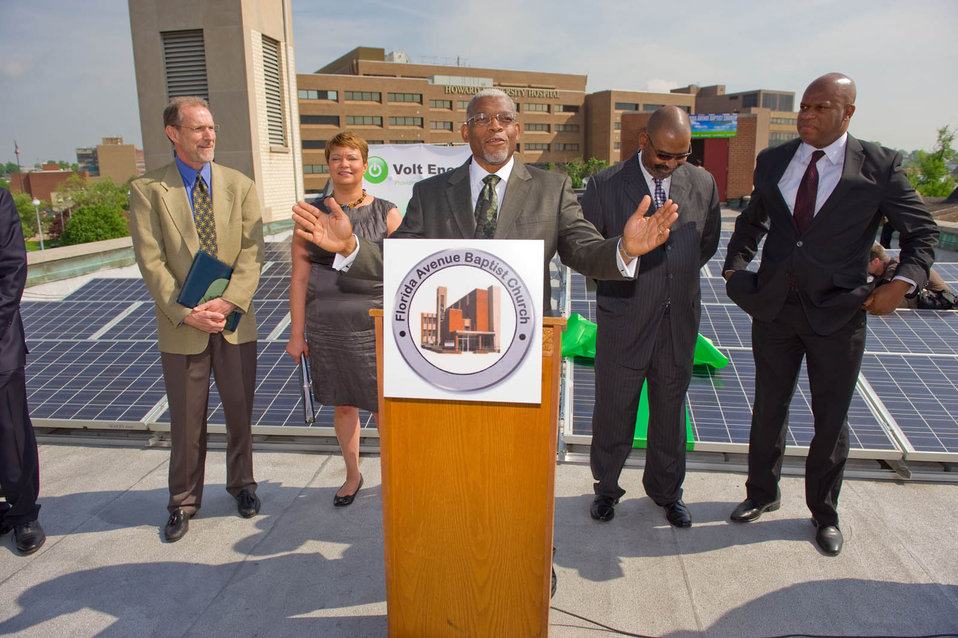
2011-05-03 FlaAveSolar 006